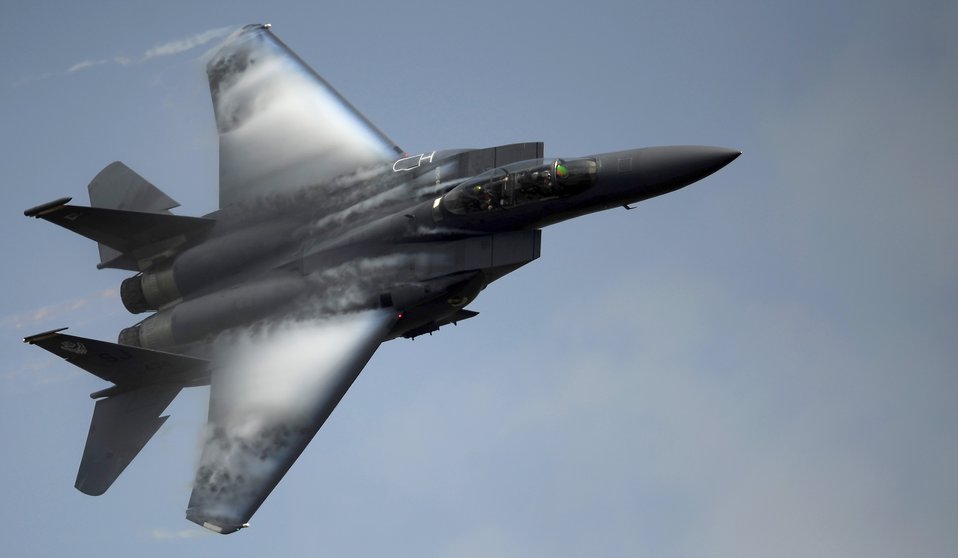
F-15E at Air Expo

An F-15E Strike Eagle pilot demonstrates the aircraft's maneuverability April 9, 2011, during the Charleston Air Expo at Joint Base Charleston S.C. The F-15E is a multirole fighter capable of air-to-surface and air-to-air combat.